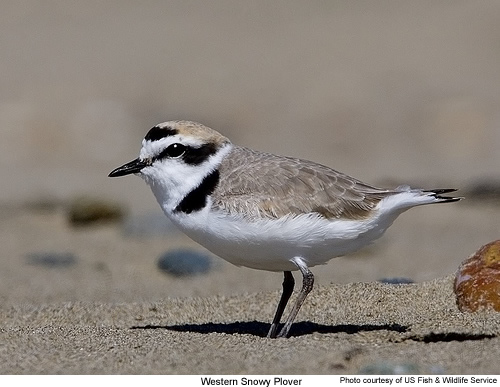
Snowy plover - Willapa NWR

The western snowy plover (Charadrius alexandrinus nivosus) is a small shorebird distinguished from other plovers (family Charadriidae) by its small size, pale brown upper parts, dark patches on either side of the upper breast, and dark gray to blackish legs.